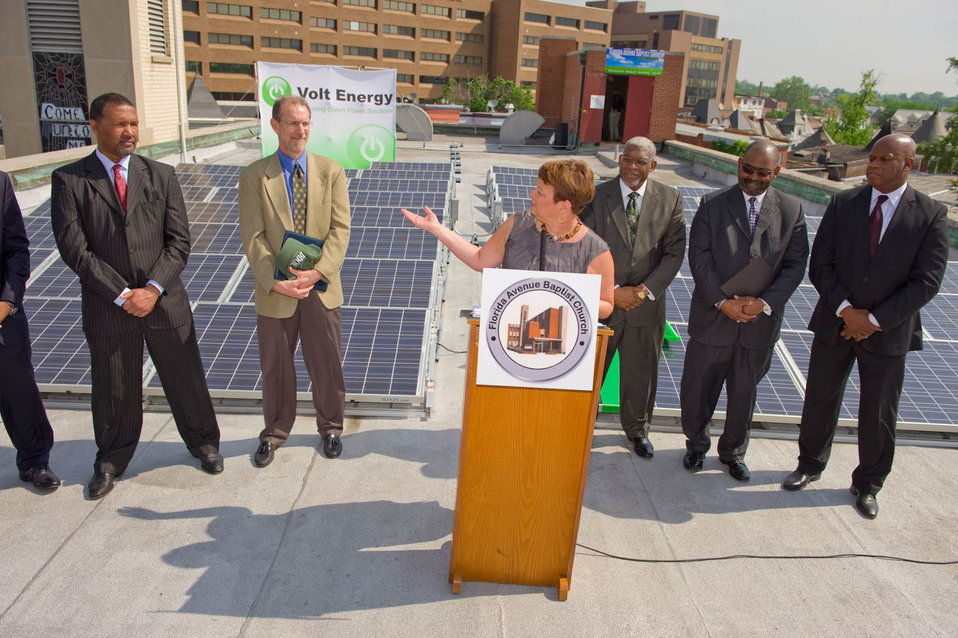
2011-05-03 FlaAveSolar 011